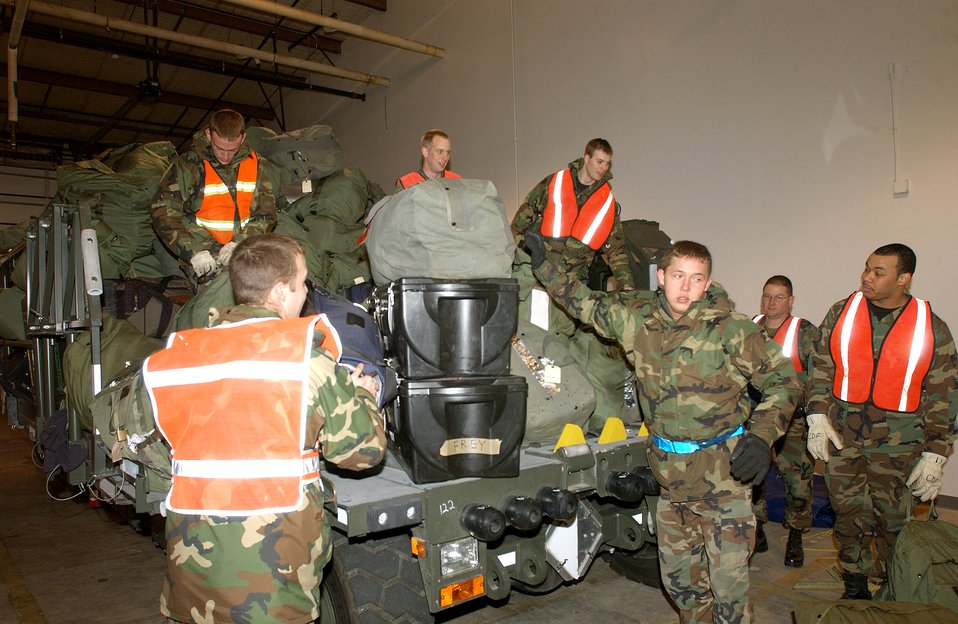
New mobility concept tested at Whiteman

WHITEMAN AIR FORCE BASE, Mo. -- Airmen here load mobility bags onto a vehicle headed for a passenger aircraft. The aggregation is an experimental mobility concept set up by U.S. Central Command Air Force officials to establish a centralized point to provide better support for deploying Airmen.